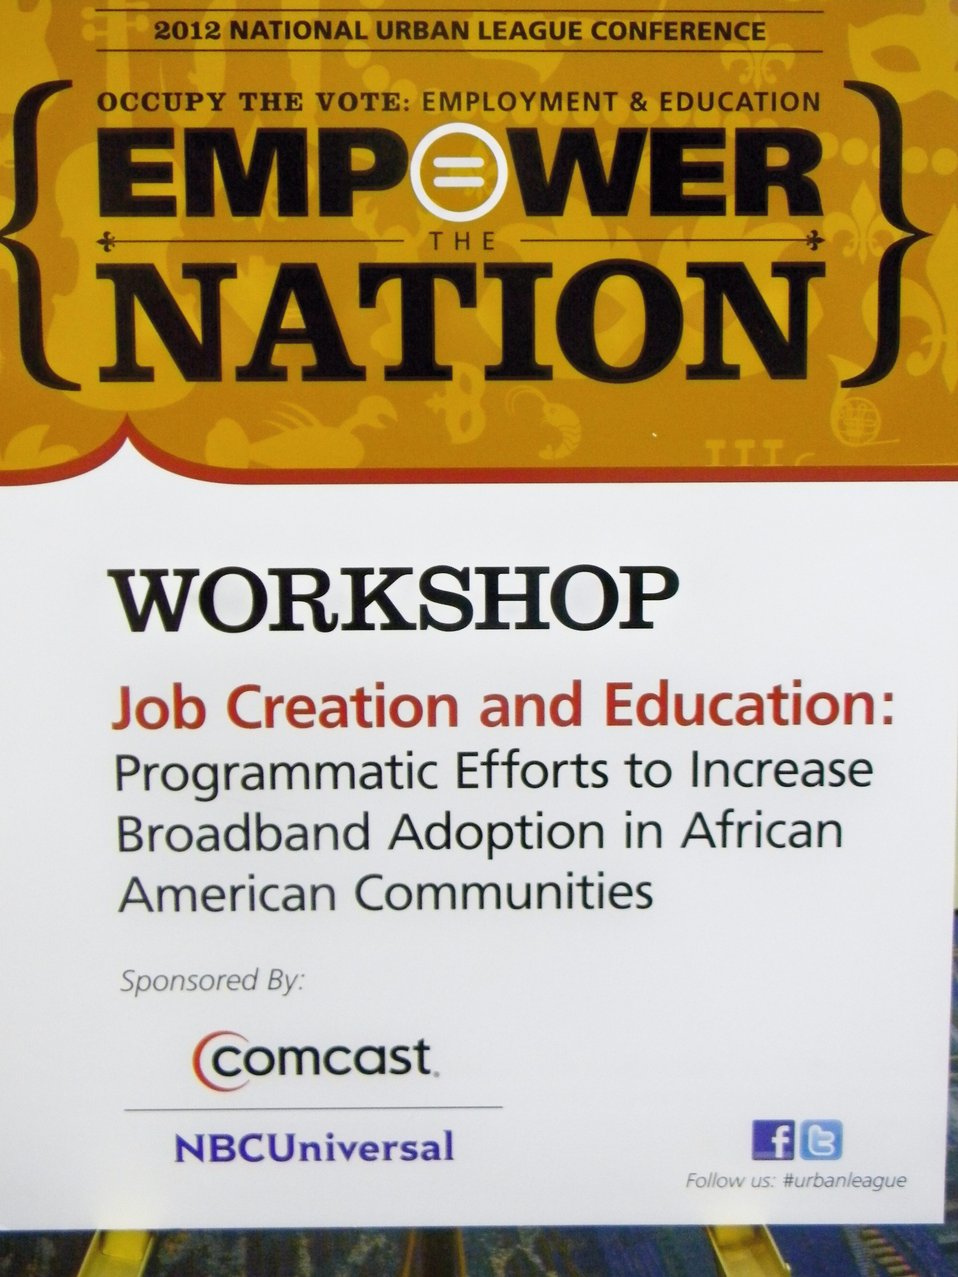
2012 National Urban League Conference